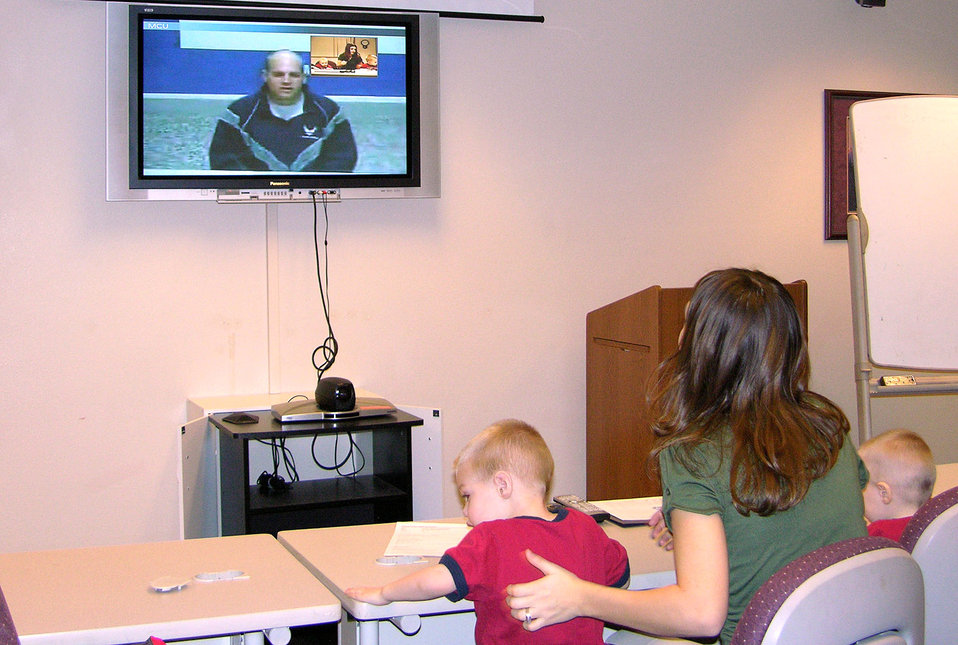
Video teleconferencing connects military families

Mandi Crandell and her sons, Trayton and Kade, use the video teleconferencing system in the Airman and Family Readiness Center at Eielson Air Force Base, Alaska, Jan. 13 to communicate with husband and father Airman 1st Class Jonathan Crandell, 354th Civil Engineer Squadron, who is deployed to Iraq.